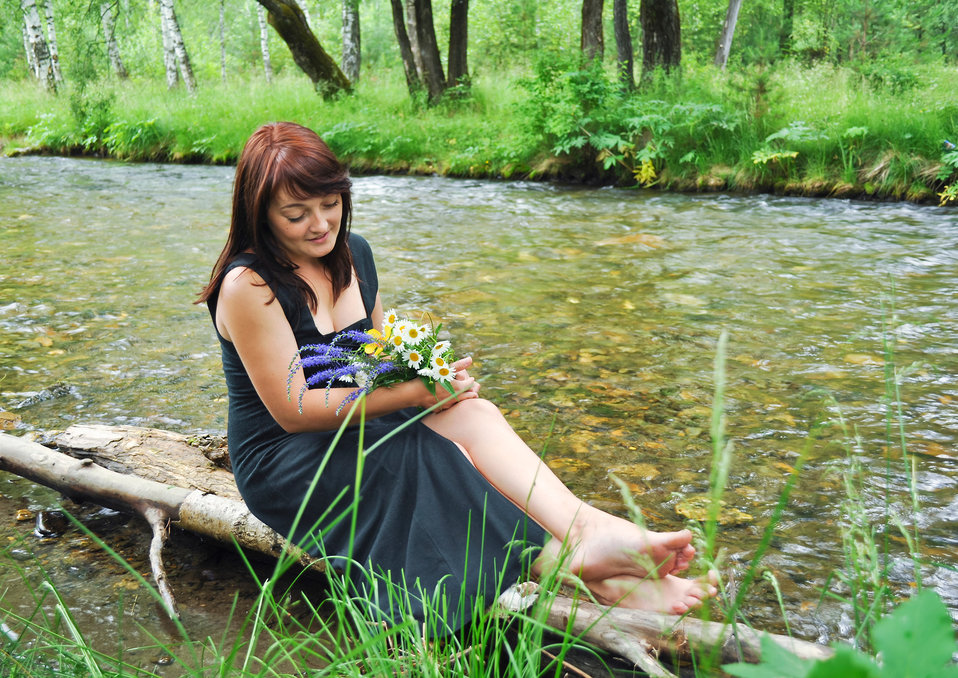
Girl with flowers

Young girl with a bouquet of flowers on a background of the river and forest..